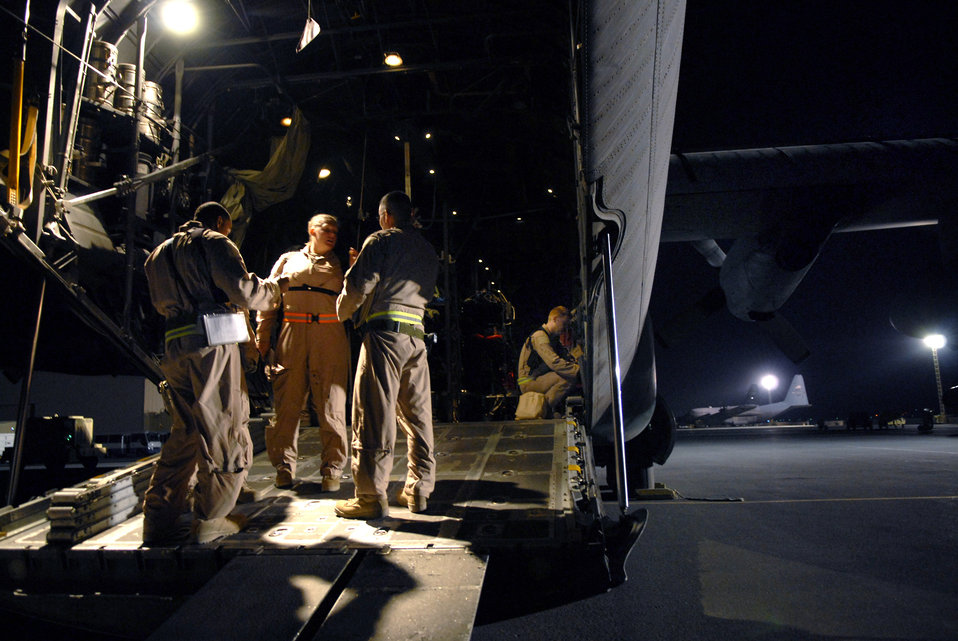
Airmen transport, care for wounded warriors

Airmen discuss details of a patient transport mission Jan. 11 at an air base in Southwest Asia. The 379th Expeditionary Aeromedical Evacuation Squadron aircrew support wounded warriors from operations Iraqi Freedom and Enduring Freedom.)